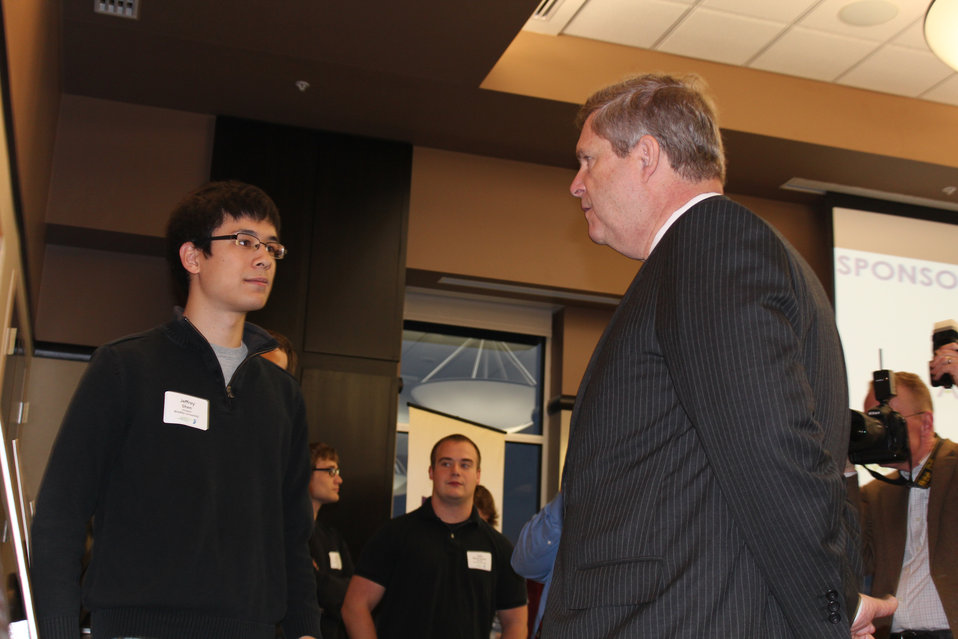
Agriculture Secretary Tom Vilsack visits with Bradley University engineering student Jeffrey Shen about his project.at the Future of Midwest Agriculture and Environmental Sustainability symposium on Thursday, Nov. 3, 2011, at Bradley University in Peoria, IL.